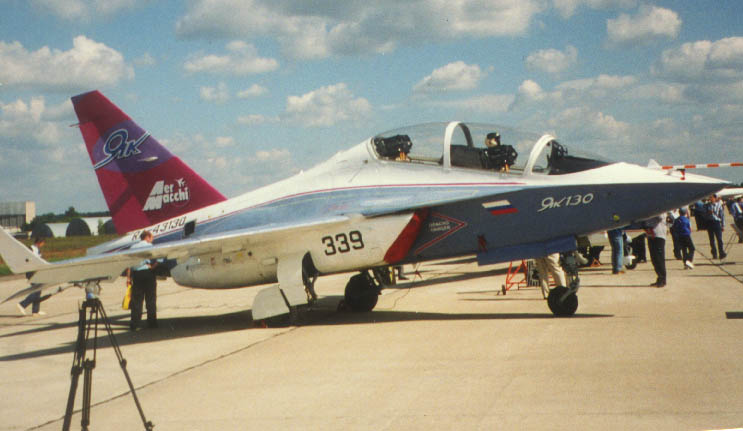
Yak-130 Foto an der Maks 1997